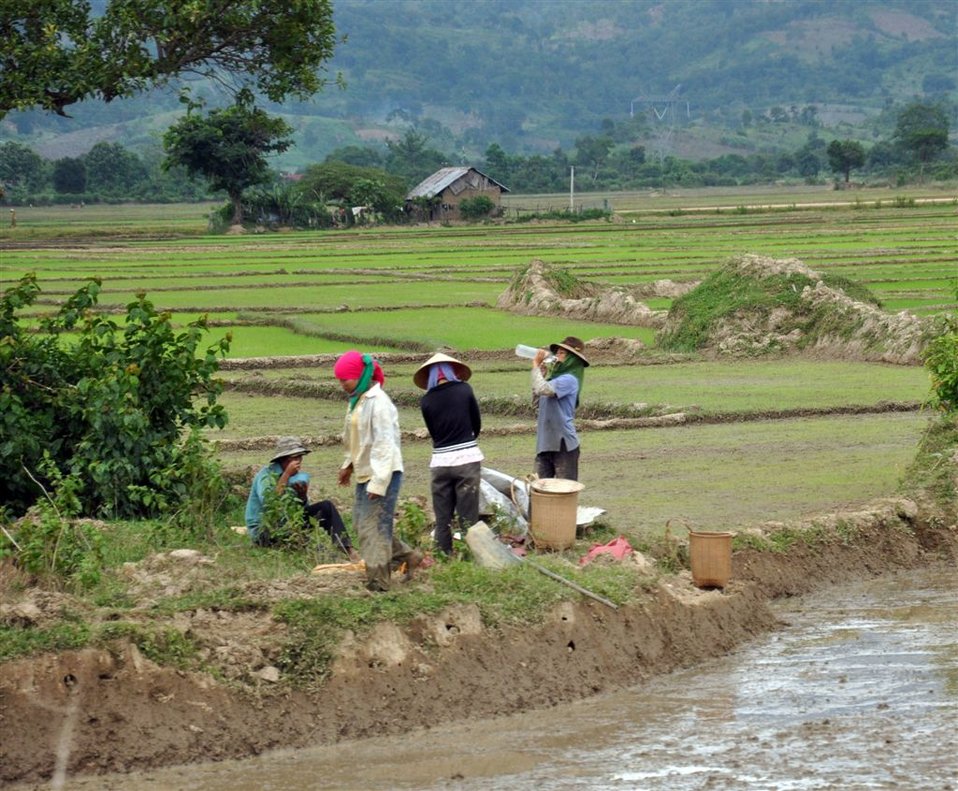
Local populations benefit from new cocoa crop techniques and market access.